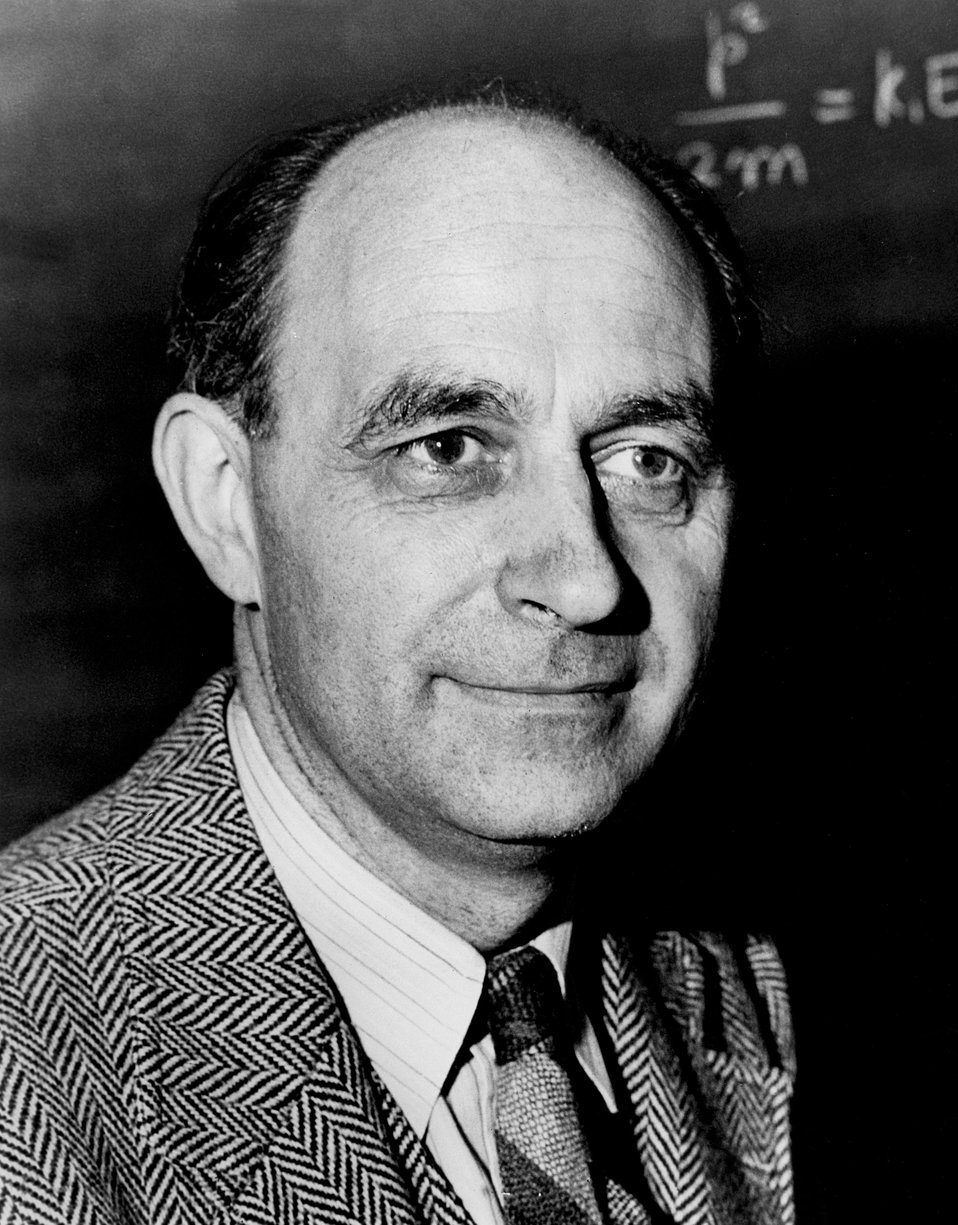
Enrico Fermi.